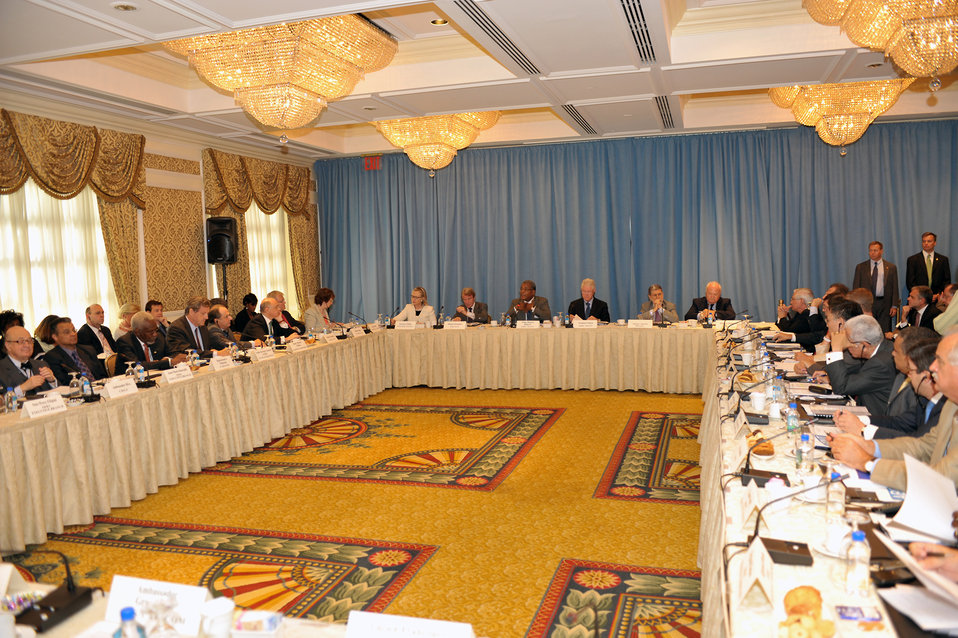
Secretary Clinton, French Foreign Minister Kouchner, Haitian Prime Minister Bellerive, and Former President Clinton Participate in a Special Session of the Interim Haiti Recovery Commission

U.S. Secretary of State Hillary Rodham Clinton (far left in the back row), French Foreign Minister Bernard Kouchner (second from left in the back row), Haitian Prime Minister Jean-Max Bellerive (third from left in the back row), Former President William J. Clinton (fourth from left in the back row), and others participate in a special session of the Interim Haiti Recovery Commission. The Commission was co-chaired by Haitian Prime Minister Jean-Max Bellerive and former President William J. Clinton in the Astor Room at the InterContinental hotel in New York, New York, on September 20, 2010.